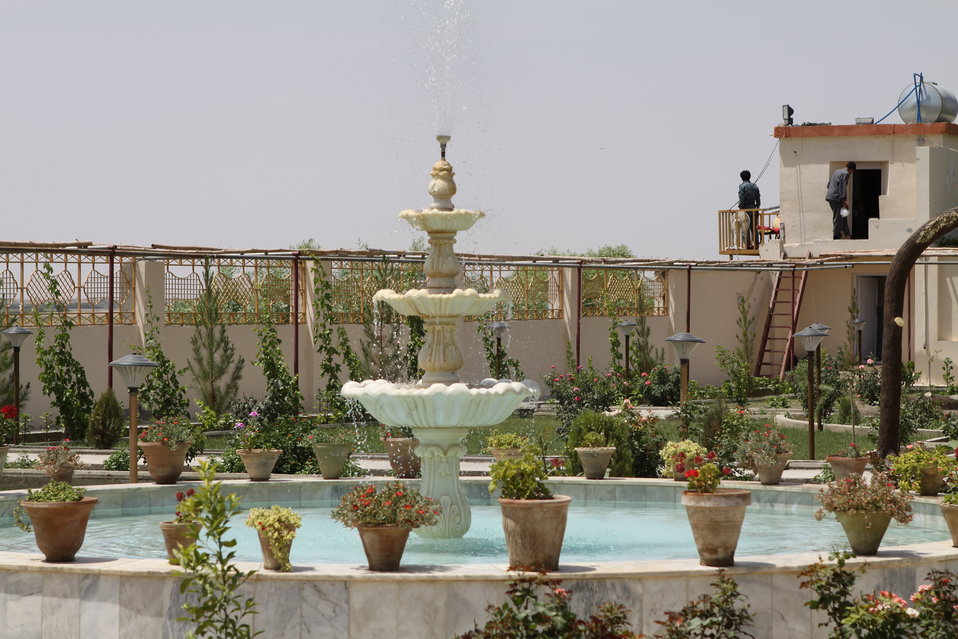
Bolan Poultry Farm